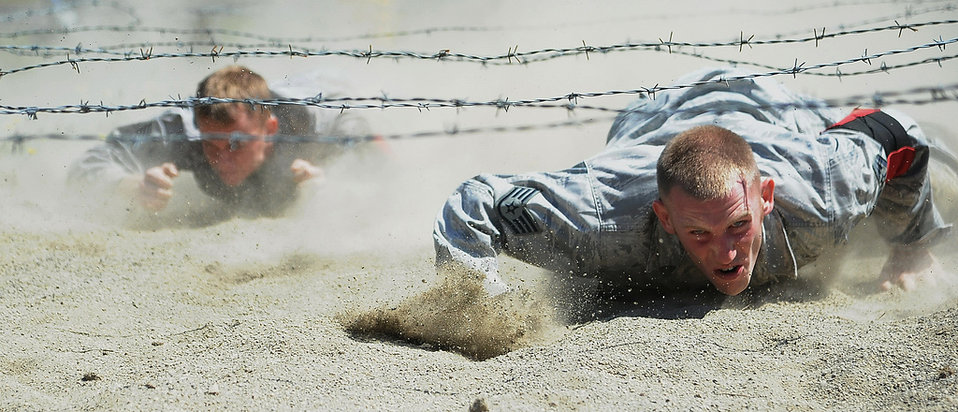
Crawling to the finish

Staff Sgt. Stephen Barber and Senior Airman Tim Dent low crawl through the combat endurance event July 28, 2011, during Air Mobility Rodeo 2011 at Joint Base Lewis-McChord, Wash. Barber and Dent are assigned to the 621st Contingency Response Wing.